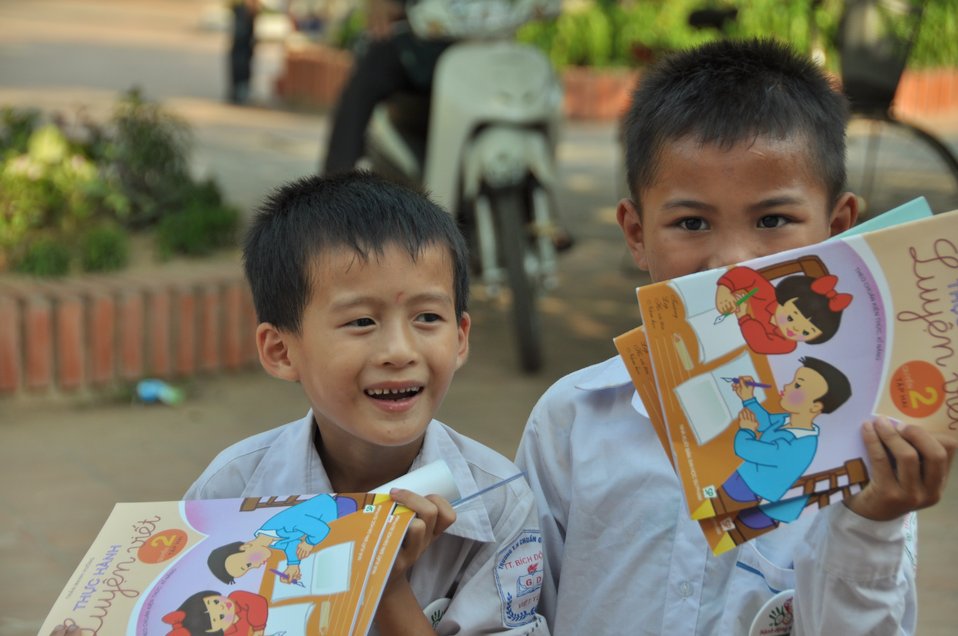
USAID supports deworming education and medication distribution in Bac Giang Province

May 20, 2013